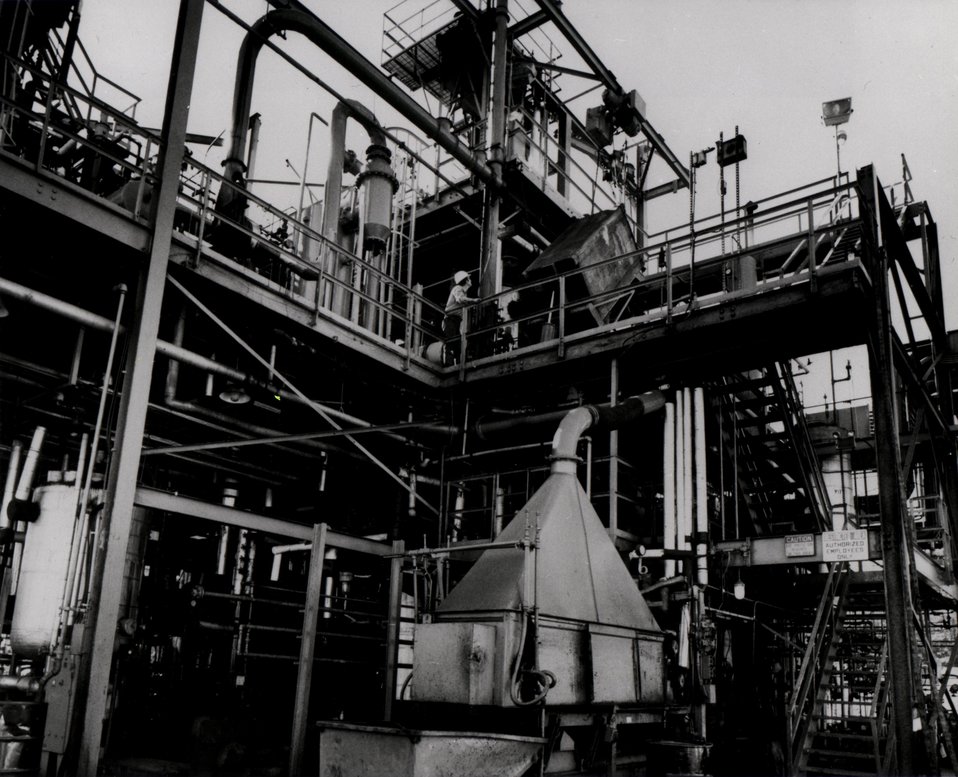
SRC-1 Coal Refinery demonstration plant at Wilsonville, Alabama. Circa 1980.